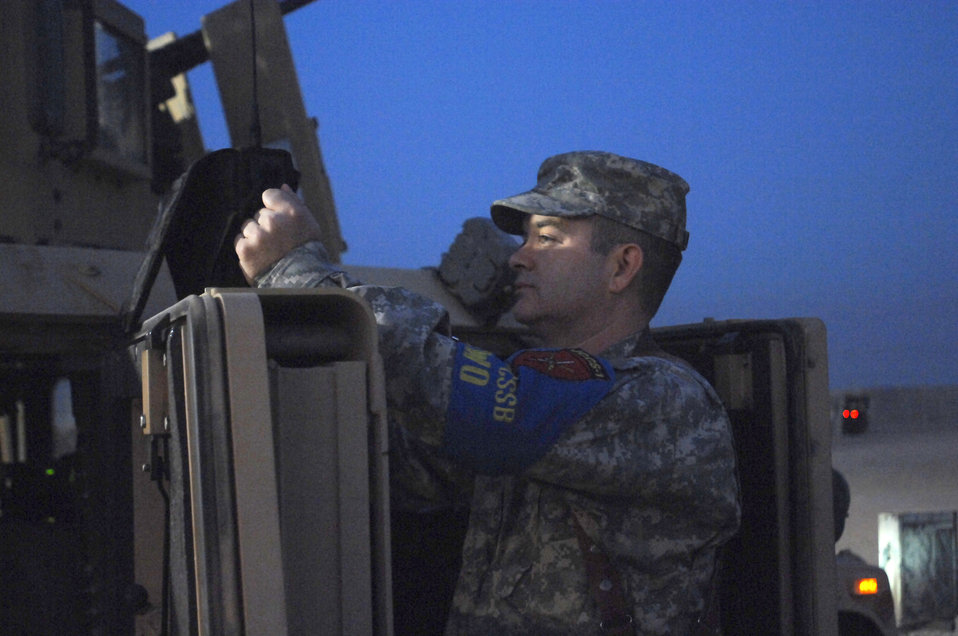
Airman saves lives 1 frequency at a time

Master Sgt. John Blackburn uses a spectrum analyzer to test electronic warfare systems in convoy vehicles Nov. 13 at Ali Base, Iraq. Sergeant Blackburn is filling a joint source solution tasking as an electronic warfare officer. He is assigned to the 732nd Expeditionary Support Squadron and attached to the Army's 142nd Combat Sustainment Support Battalion. He is deployed from Tyndall Air Force Base, Fla.